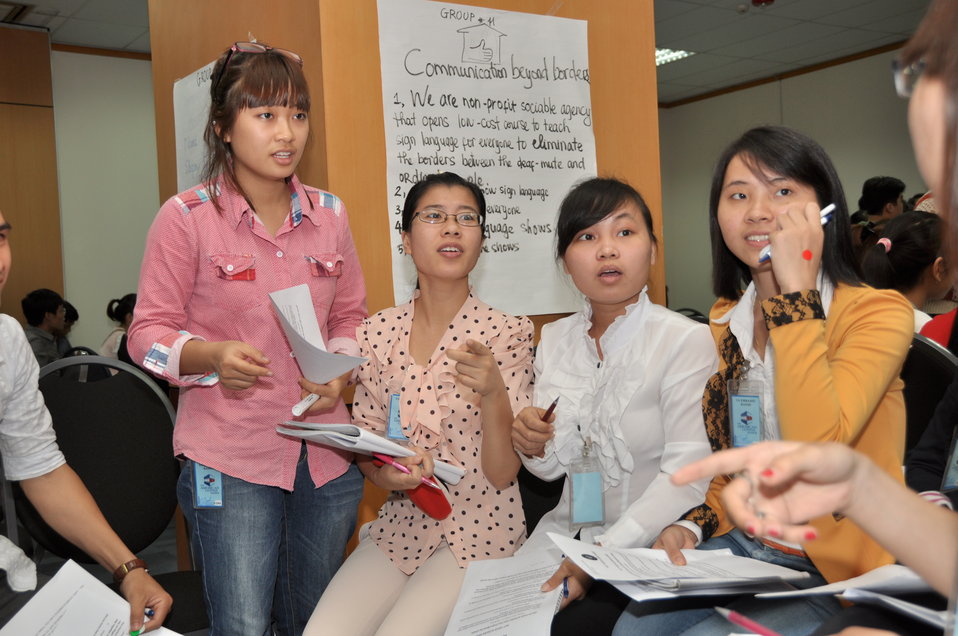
Vietnamese university students join the Business Plan Mashup exercise

Photo: @USAIDVietnam, November 16, 2012